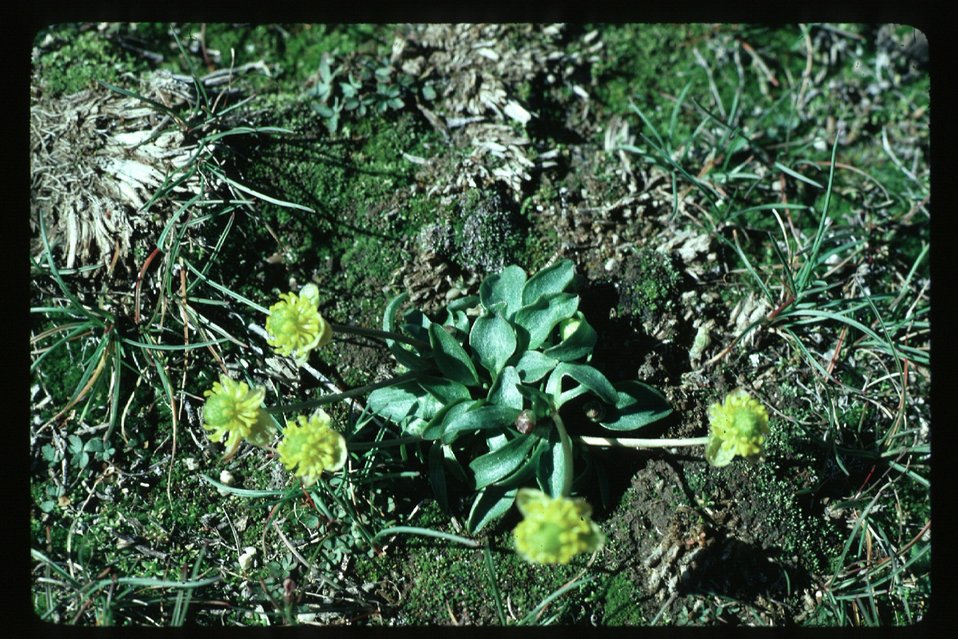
Ranunculus glaberrimus Sagebrush buttercup Wildflower